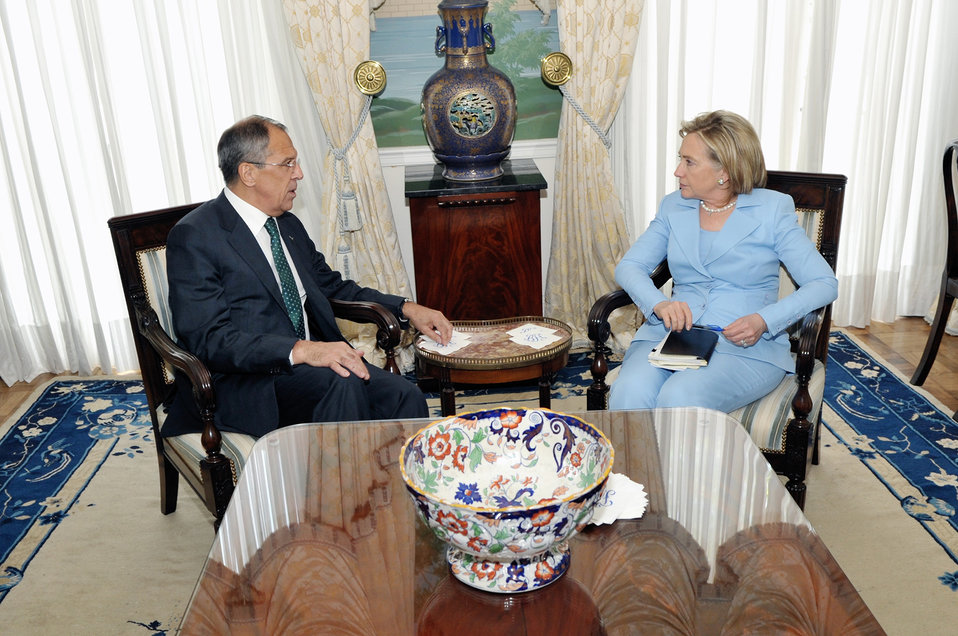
Secretary Clinton Hosts Bilateral With Russian Foreign Minister Lavrov

U.S. Secretary of State Hillary Rodham Clinton holds a bilateral meeting with Russian Foreign Minister Sergey Lavrov at the Blair House in Washington, D.C., on June 24, 2010.